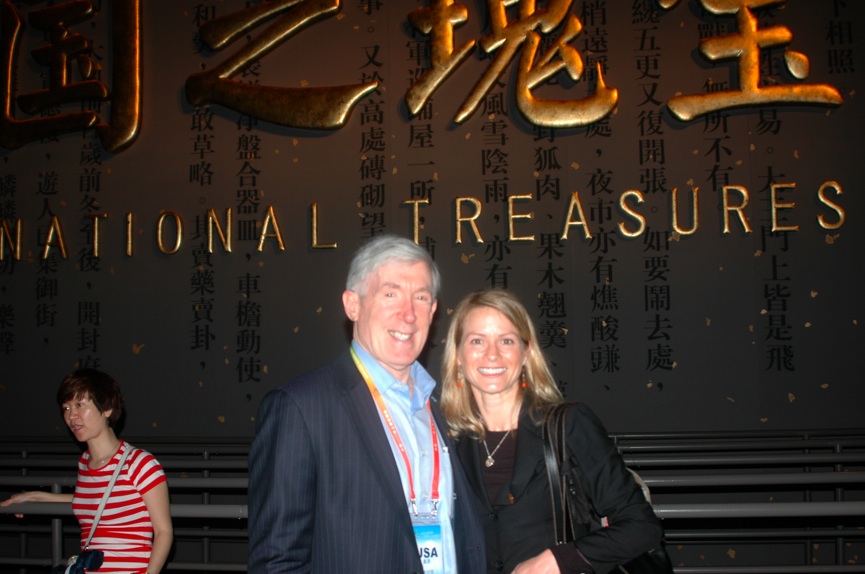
Under Secretary Hormats Poses for a Photo With Special Advisor Stanton

Under Secretary of State for Economic, Energy and Agricultural Affairs Robert Hormats speaks with Director of Citizen Participation and Special Advisor on Innovation Katie Jacobs Stanton outside of the National Treasures in Shanghai, China, May 22, 2010.